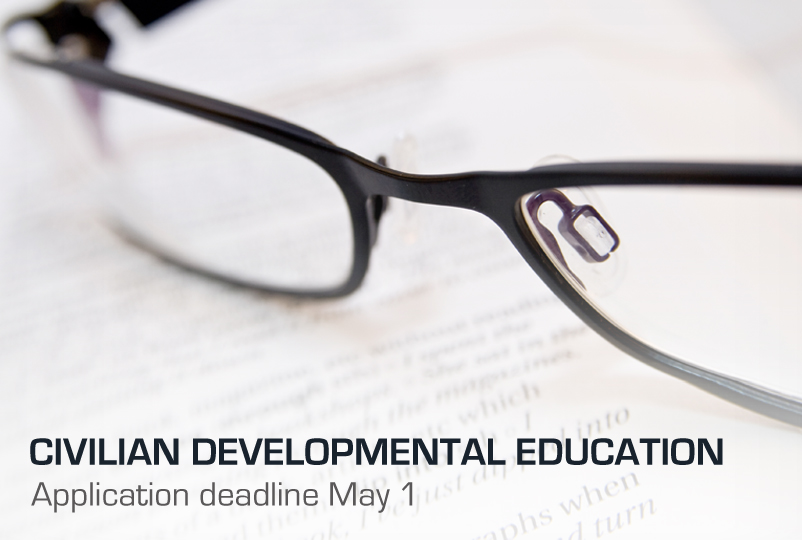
Civilian Developmental Education